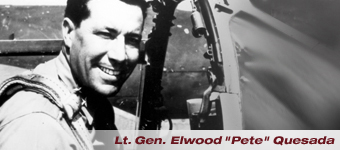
Lt. Gen. Pete Quesada

Lt. Gen. Elwood